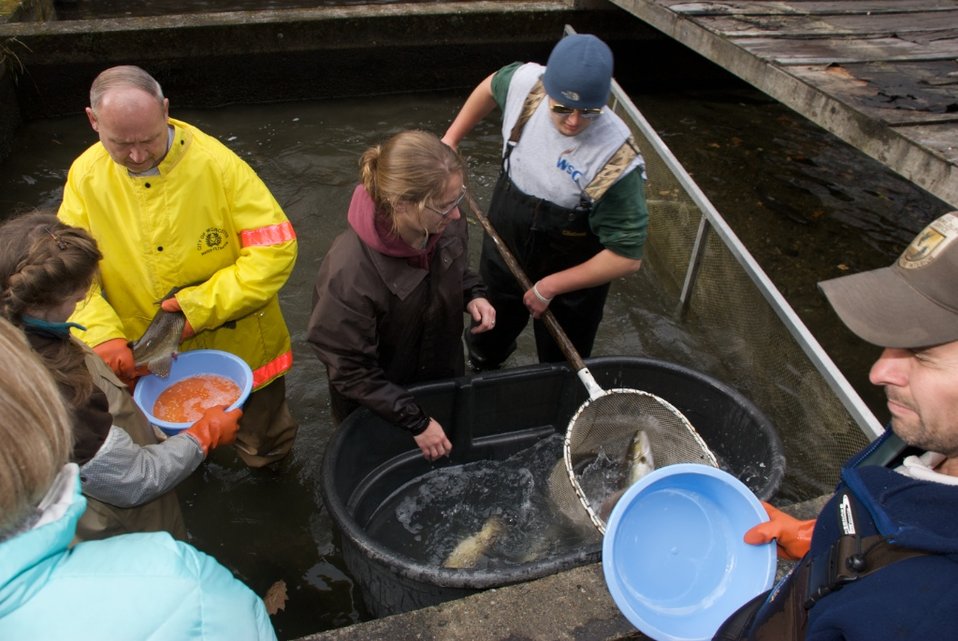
Richard Cronin National Salmon Station

Volunteers harvesting salmon eggs at the Richard Cronin National Salmon Station in Sunderland, MA.